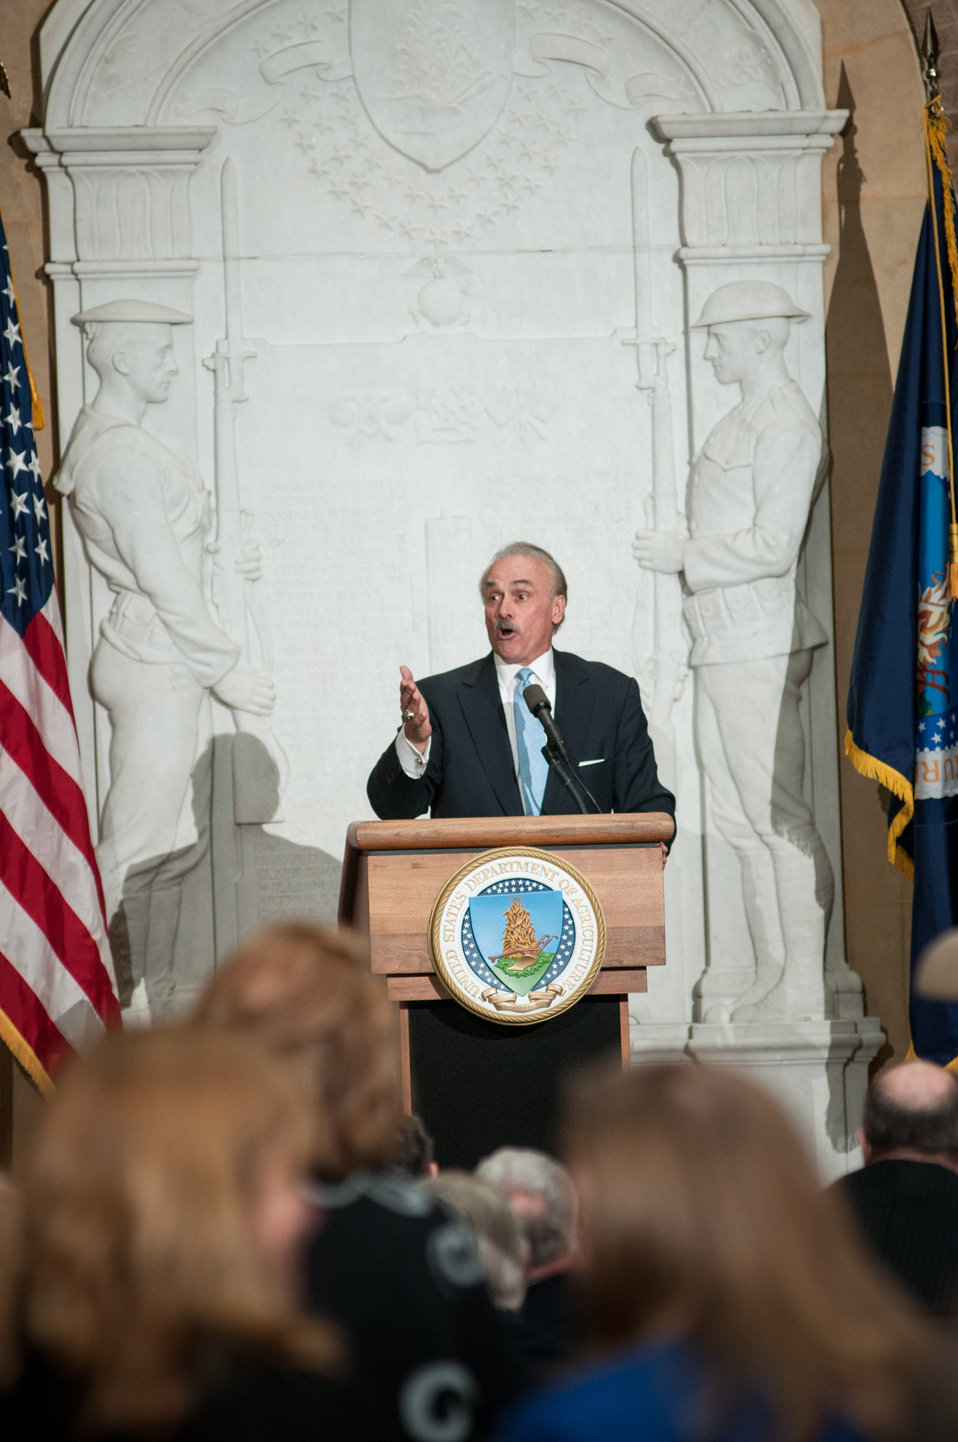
Keynote speaker and former National Football League Pittsburgh Steelers halfback Robert Patrick 'Rocky' Bleier spoke about the importance of milk in his childhood growth, and recounted some of his historic game-winning football play, during a luncheon with dairy producers, Dairy Management, Inc., (DMI) and other stakeholders from the dairy producers industry, at the Whitten Building Patio, in Washington, D.C. on Tuesday, Feb. 26, 2013.